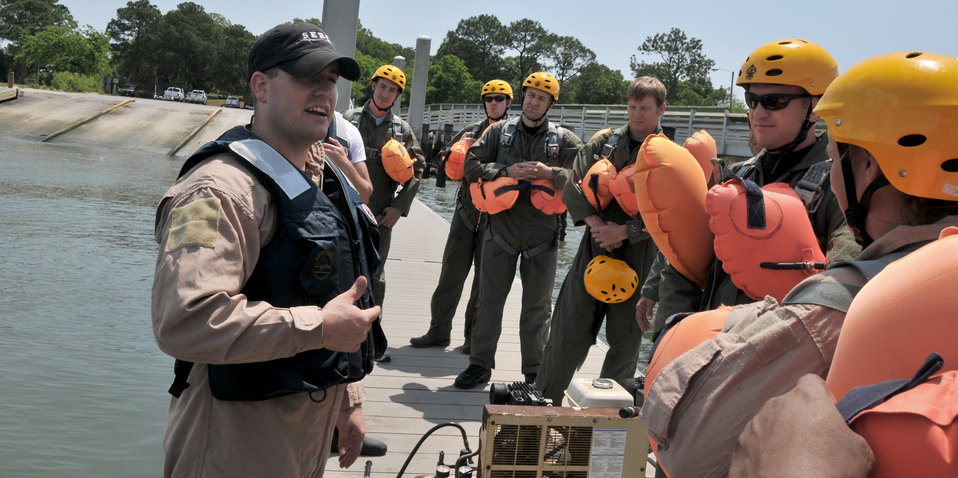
Water survival training course

Staff Sgt. Anthony Barrette does a final safety brief before the Airmen board an inflatable boat during a water survival training course May 2, 2011, at Charleston Harbor, S.C. Sergeant Barrette is a survival, evasion, resistance and escape specialist from the 437th Operations Support Squadron at Joint Base Charleston.